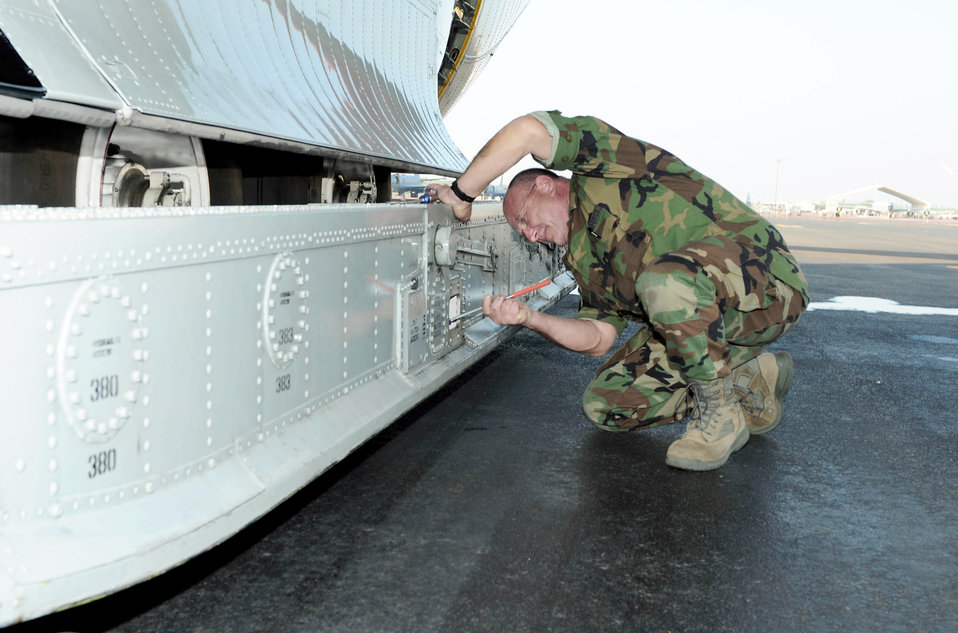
Deep Freeze

Master Sgt. Joseph Sinatra checks the air spring pressure on an LC-130 Hercules during a stop Oct. 18, 2010, at Hickam Air Force Base, Hawaii. The springs are used to absorb the shock of landing the ski-equipped aircraft on the Antarctic ice. Sergeant Sinatra and the rest of his LC-130 aircrew stopped at Hickam while en route to Antarctica to support Operation Deep Freeze, the Defense Department?s logistical support to U.S. research activities at the southernmost continent. Sergeant Sinatra is an LC-130 crew chief assigned to the New York Air National Guard's 109th Airlift Wing at Stratton Air National Guard Base, N.Y.